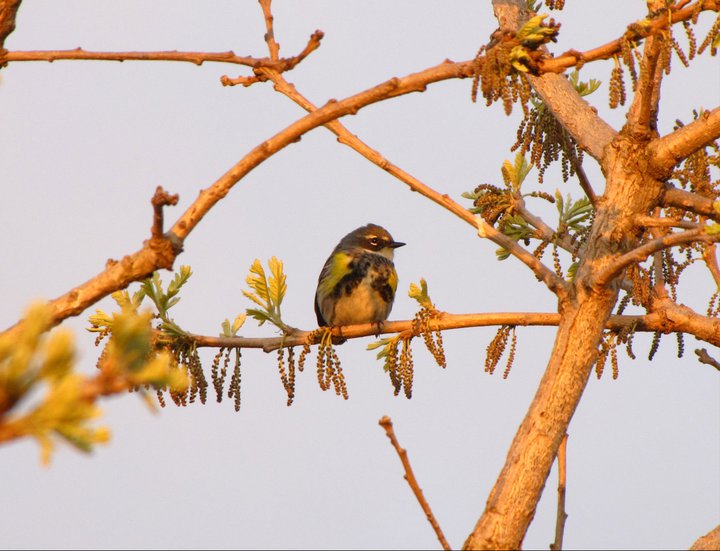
yellow-rumped warbler

Port Louisa National Wildlife Refuge